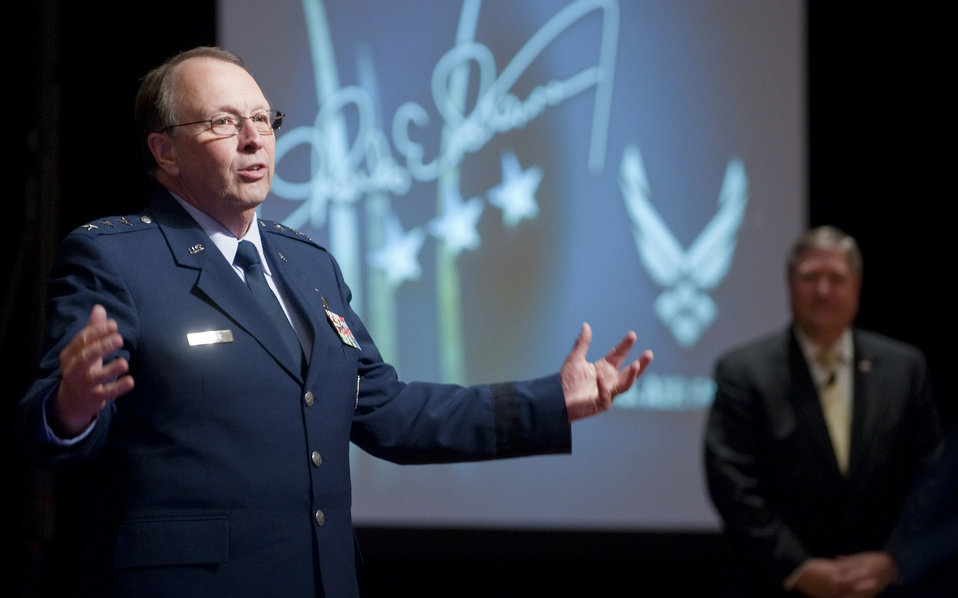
Air Force Reserve Command Senior Leader Conference

Chief of the Air Force Reserve and Air Force Reserve Command Commander Lt. Gen. Charles Stenner (left) introduces Secretary of the Air Force Michael Donley (right) who gave the keynote address during the Air Force Reserve Command Senior Leaders Annual Conference on May 16, 2011, in Washington, D.C.